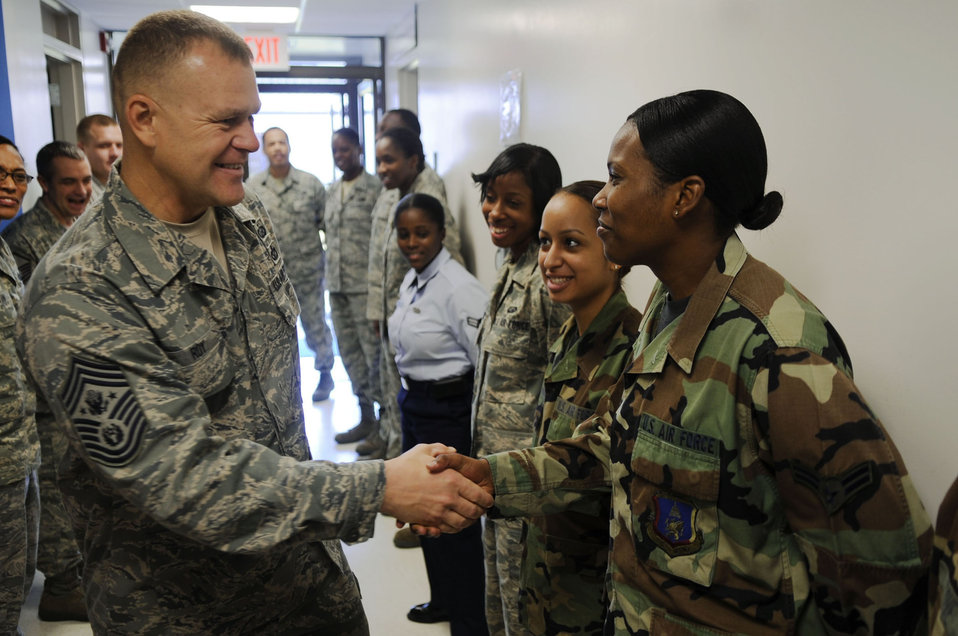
Top enlisted Airman visits Andrews Airmen

Chief Master Sgt. of the Air Force James A. Roy meets Airman 1st Class Ashley Adams during a visit Oct. 7, 2009, to Joint Base Andrews Naval Air Facility Washington. Chief Roy met with Airmen to thank them for their support. Airman Adams is a 316th Force Support Squadron career development technician.